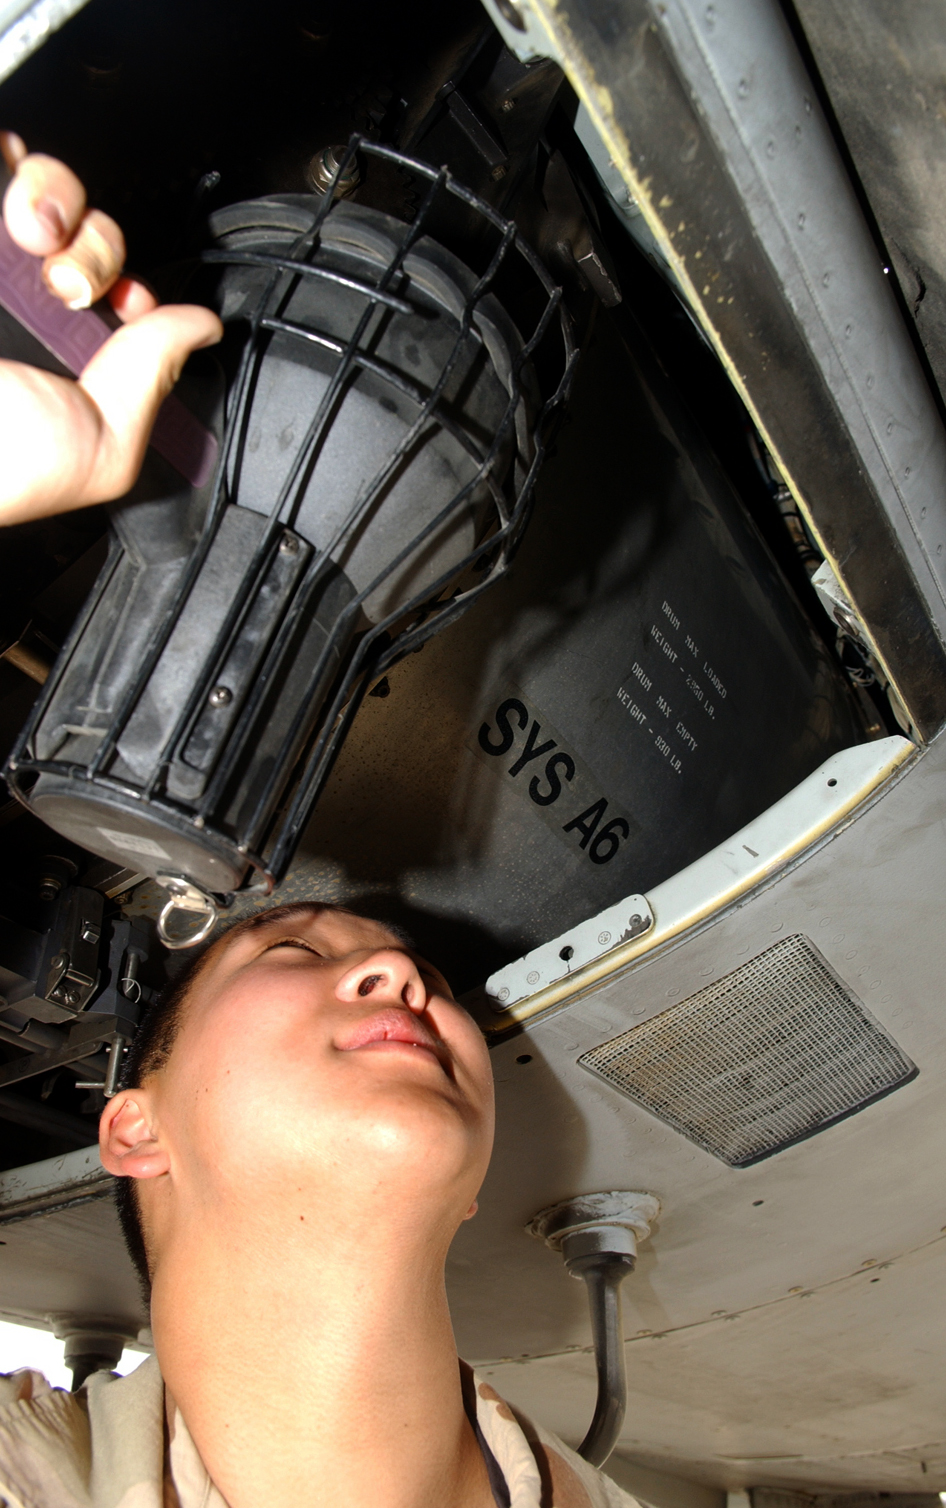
Special team searches for aircraft cracks

BAGRAM AIR BASE, Afghanistan -- Airman 1st Class Kevin Louie uses a special light to monitor a crack on an A-10 Thunderbolt II frame here. Airman Louie is a nondestructive inspection technician assigned to the 354th Expeditionary Aircraft Maintenance Squadron.